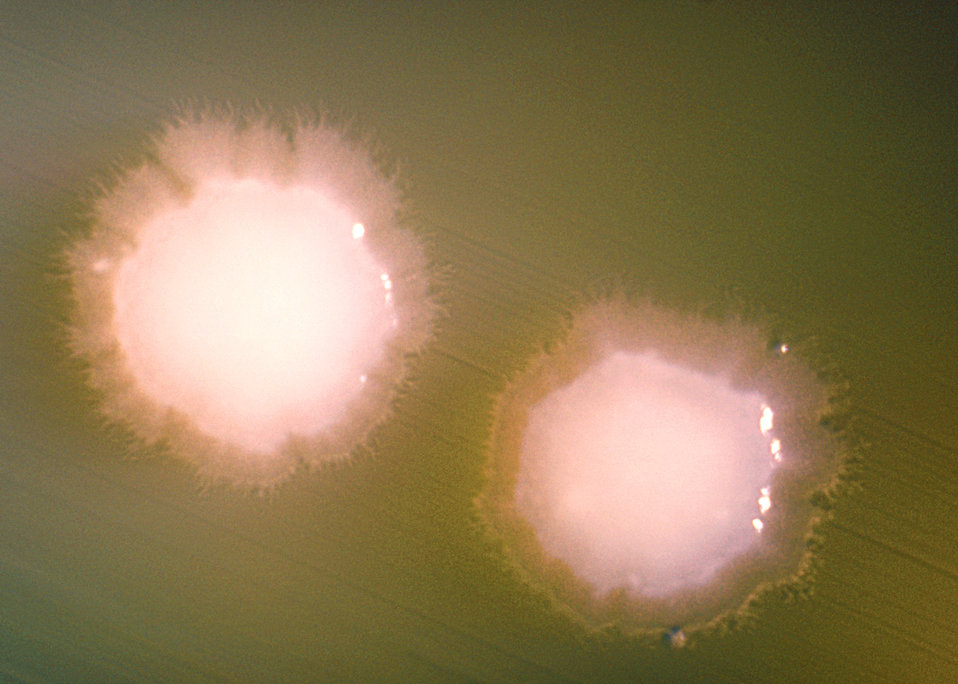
A BHI agar plate culture of Actinomyces sp., strain X-573, at 10 days.